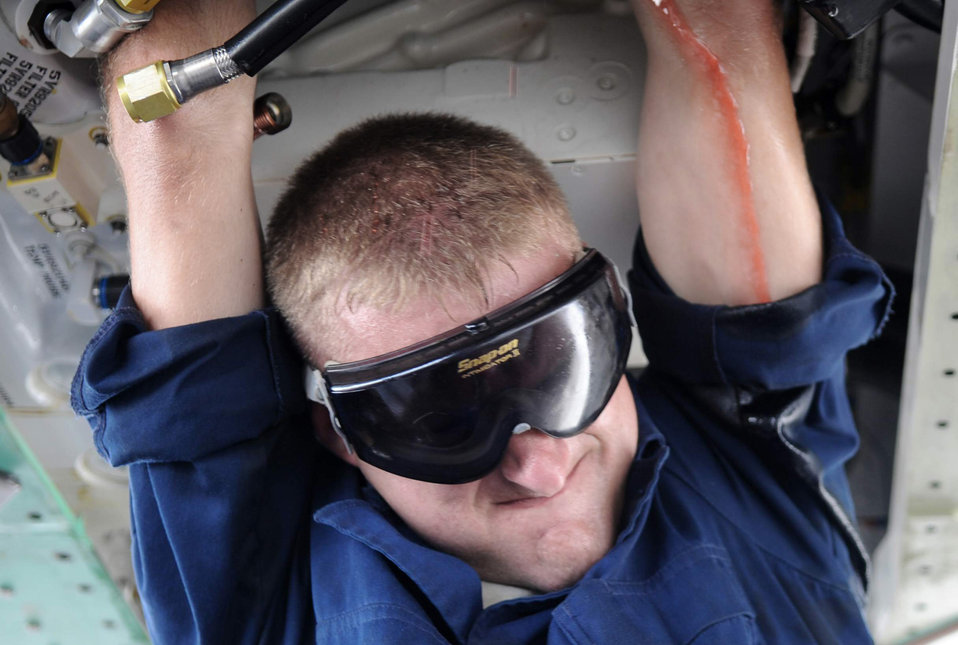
Maintainers keep F-22s ready in Guam

Senior Airman Theodore Cupp, an F-22 crew chief assigned to 525th Expeditionary Aircraft Maintenance Unit, performs maintenance on a hydraulic pump of an F-22 June 3. The Mendon, Mich., native, is deployed to Andersen Air Force Base, Guam from Elmendorf Air Force Base, Alaska in support of U.S. Pacific Command's Theatre Security Package.